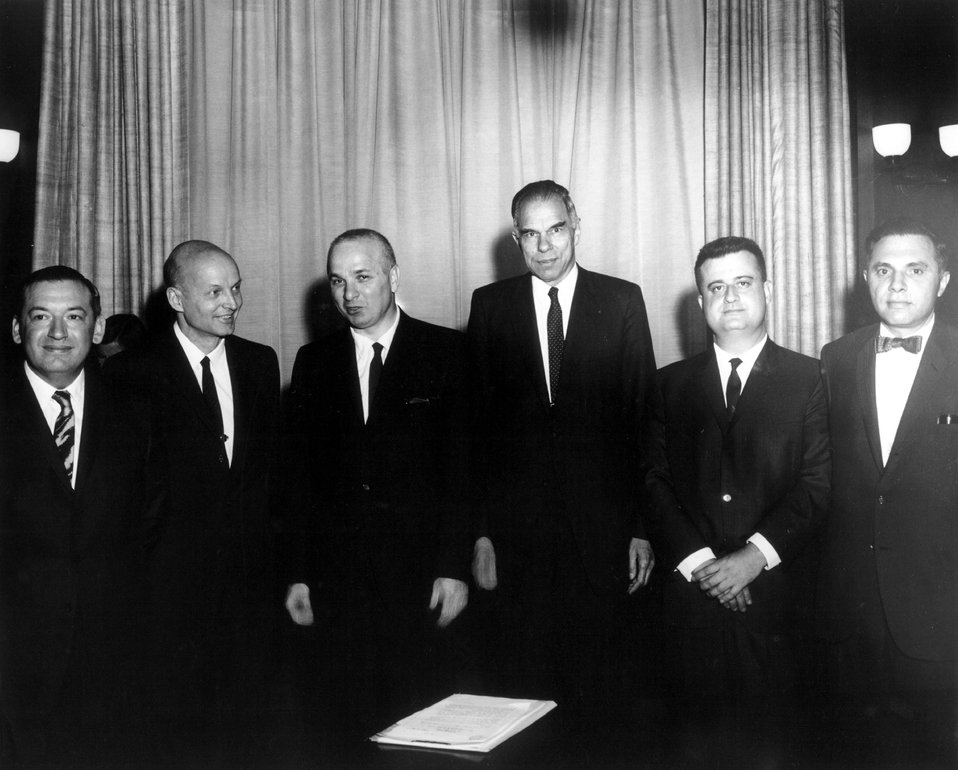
Lawrence Award, 1966. Agnew, Anderson, Gell-Mann, Hutzenga, Vanstrum.